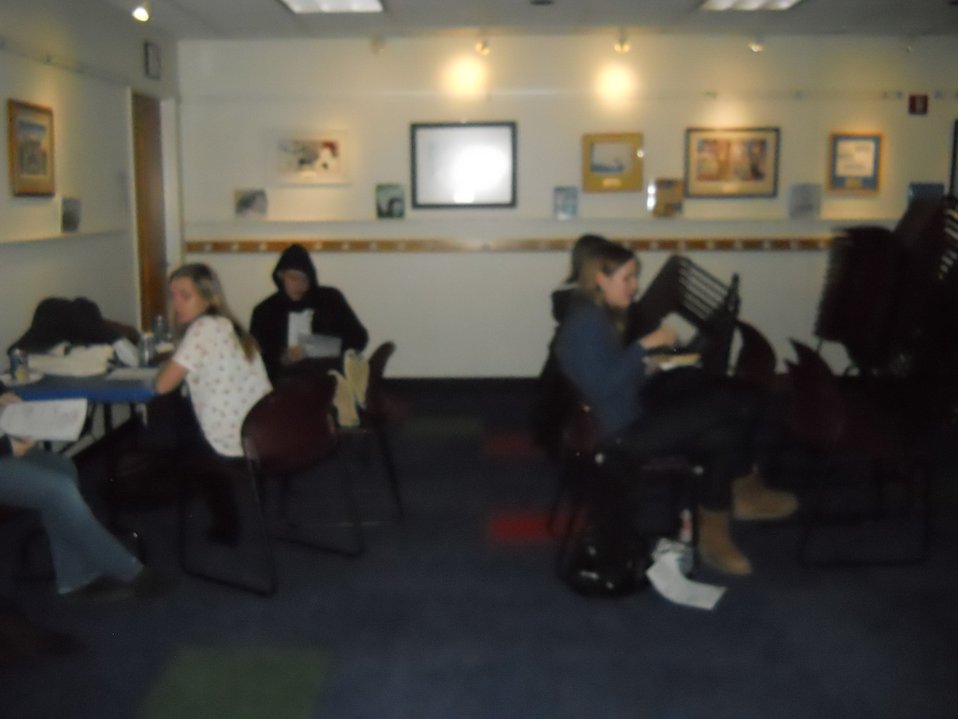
NDFW Chat Day 2013

Perrysburg, Oh. NDFW 2013 Chat Day event with Prevention Partners Program.